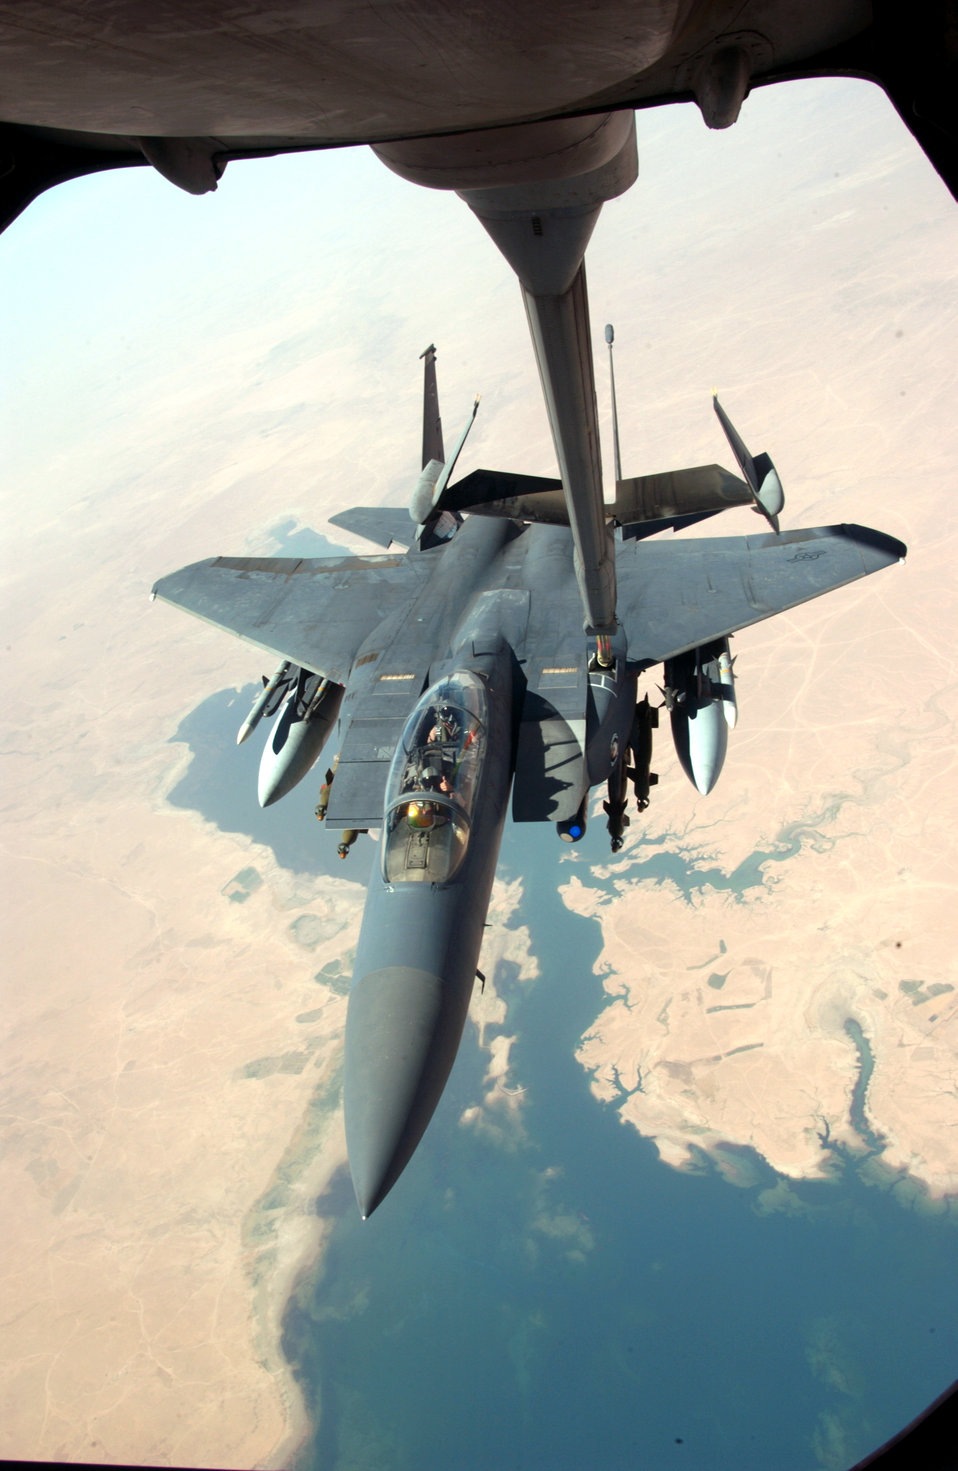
Fill er' up please

OVER IRAQ -- An F-15E Strike Eagle deployed from Seymour Johnson Air Force Base, N.C., receives fuel from a KC-10 Extender here recently. Both aircraft are supporting Operation Iraqi Freedom.